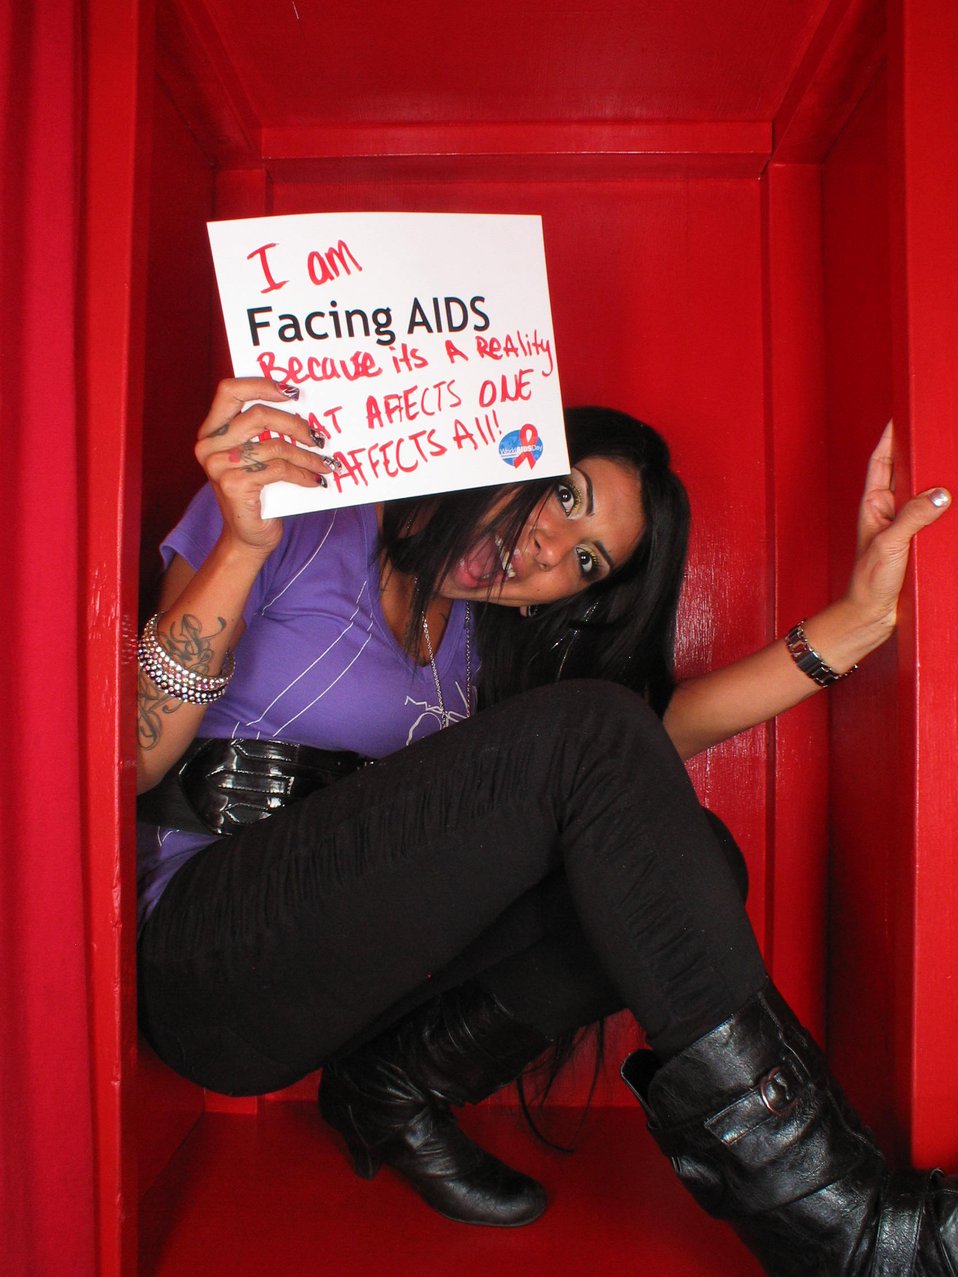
Facing AIDS because its a reality what affects one affects all.